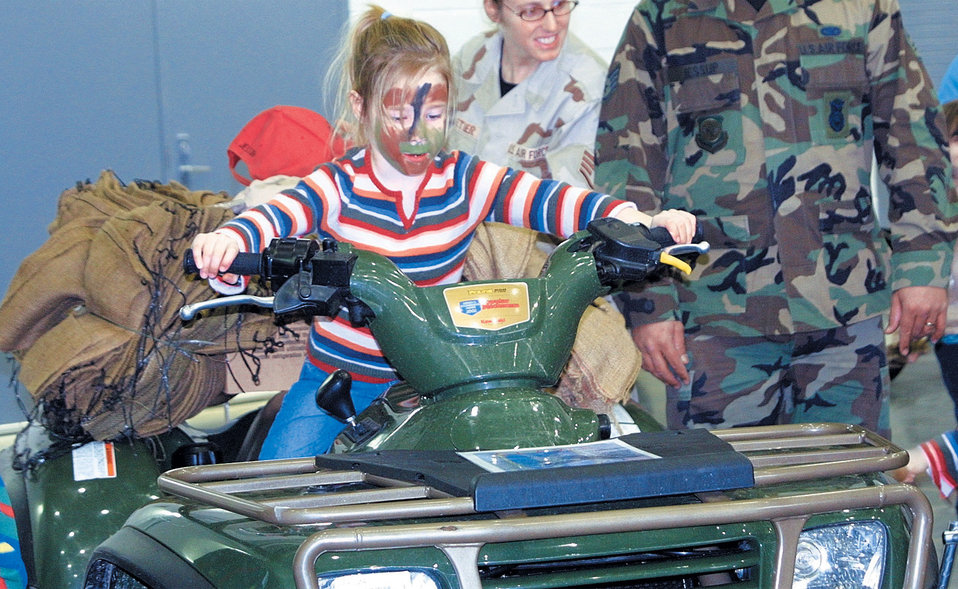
Child's play

POPE AIR FORCE BASE, N.C. -- McKenzie Jessup checks out an all-terrain vehicle during Operation Little Gryphon here Jan. 28. Families walked through the many steps and aspects of a deployment to experience what deployment means for active-duty parents. The children also learned self-aid buddy care from the American Red Cross and learned what chaplains do while deployed. McKenzie is the daughter of Staff Sgt. Joe Jessup of the 43rd Security Forces Squadron.